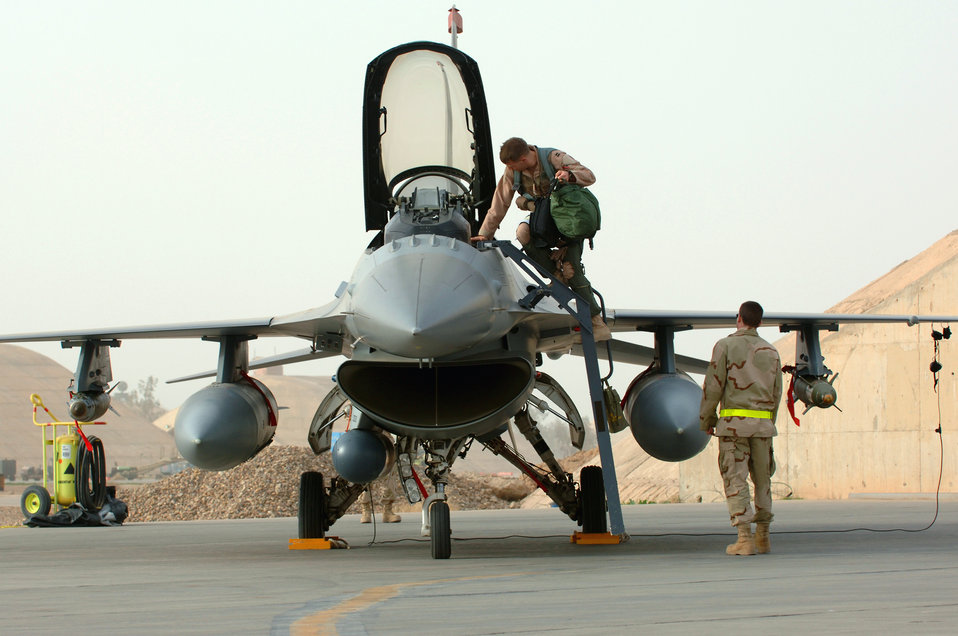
Buckle up

Capt. William Lutmer climbs into an F-16 Fighting Falcon while Senior Airman Skylar Mims assists him Jan. 29 at Balad Air Base, Iraq. Captain Lutmer is deployed to the 332nd Air Expeditionary Wing as part of the 14th Expeditionary Fighter Squadron. Airman Mims is a crew chief for the 14th Expeditionary Aircraft Maintenance Squadron. The 14th Fighter Squadron is deployed from Misawa Air Base, Japan.